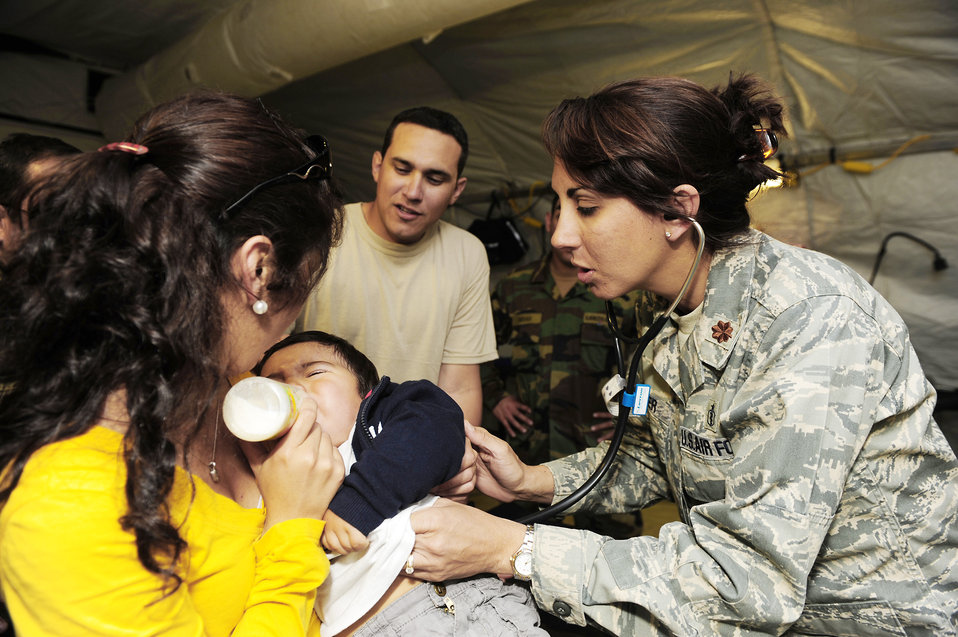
Airmen, Chileans treat patients in new expeditionary hospital

Maj. Deena Sutter checks the heartbeat of an ill child at an expeditionary hospital March 14, 2010, in Angol, Chile. Airmen from an Air Force Expeditionary Medical Support team along with members of the Chilean army built a mobile hospital here to help augment medical services for nearly 110,000 Chileans in the region. Major Sutter is assigned to the 59th Medical Wing, Wilford Hall Medical Center at Lackland Air Force Base, Texas.